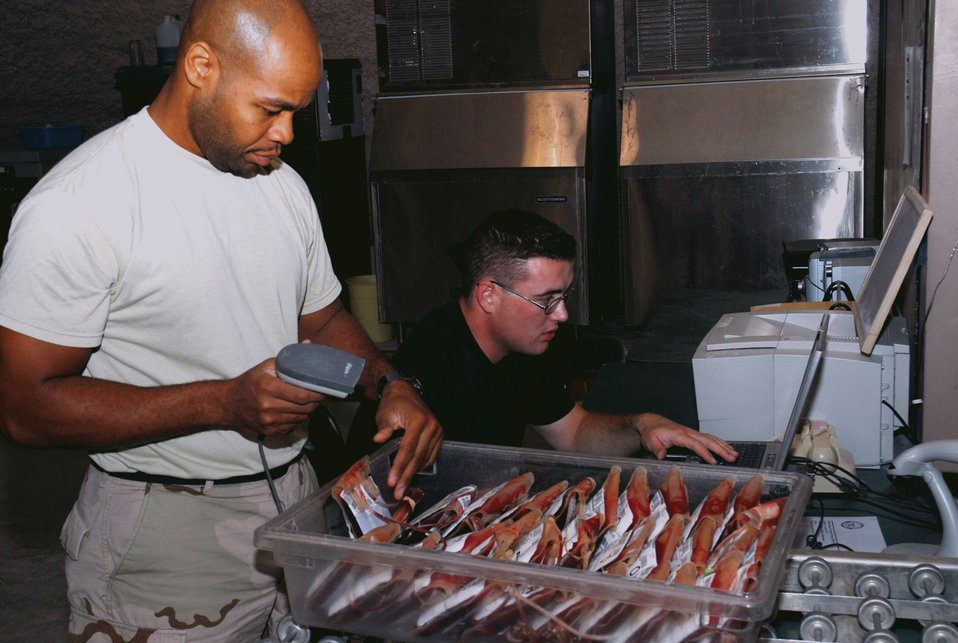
Pumping blood from the

Tech. Sgt. Joseph Pinkney (left) and Senior Airman Thomas Sullivan use the defense blood standard system Nov. 20 to scan and track blood products that are being shipped from their Southwest Asia base to Balad Air Base, Iraq. Sergeant Pinkney and Airman Sullivan are with the 379th Expeditionary Medical Group's blood transshipment center.